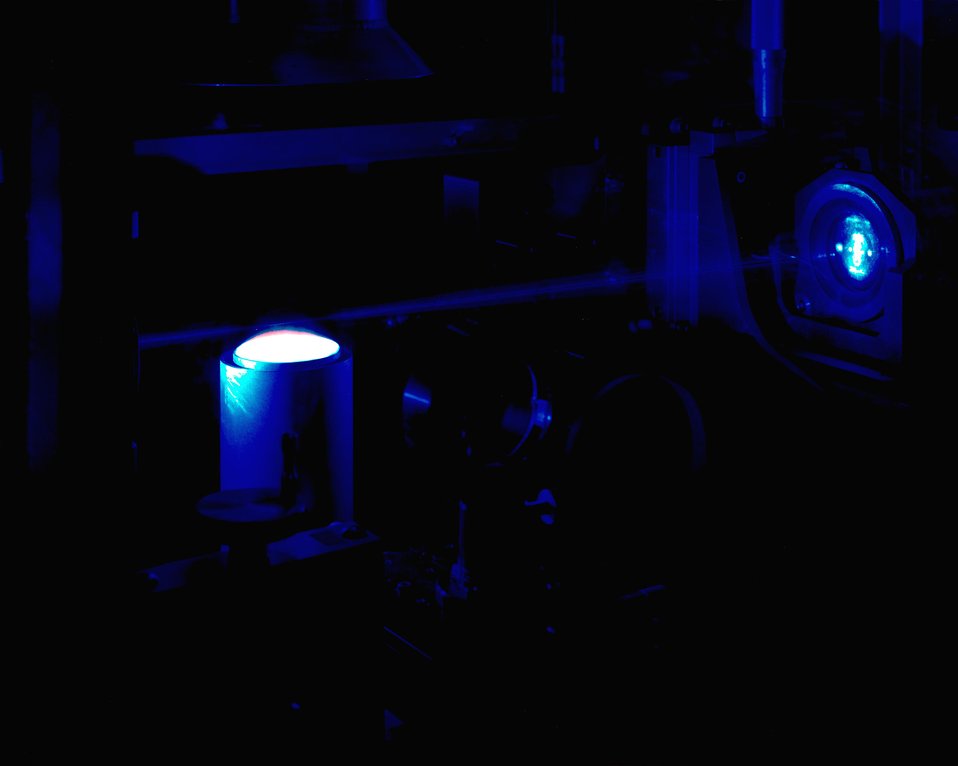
RAMAN SPECTROSCOPY TO MEASURE AMBIENT PRESSURE FLAME.

SCIENTISTS USE ADVANCED LASERS AND COMPUTERS AT THE 50,000 SQUARE FOOT, FOUR-BUILDING COMBUSTION RESEARCH FACILITY TO STUDY EXACTLY HOW AND WHY FUELS BURN. IN THE LABORATORY BUILDING, SPECIAL LASER SYSTEMS WITH BEAMS ARE DISTRIBUTED TO 14 INDIVIDUAL LABORATORIES. EACH LABORATORY IS SERVED BY A MINICOMPUTER WHICH IS CONNECTED TO A CENTRAL DATA SYSTEM. IN ADDITION TO BENCH-TOP FLAME STUDIES, THE FACILITY HOUSES SEVERAL MAJOR COMBUSTION EXPERIMENT LABS, INCLUDING FIVE OPTICALLY PORTED RESEARCH ENGINES, A COMPUTER-CONTROL- LED COMBUSTION BOMB, AND LOW-PRESSURE FLAME, COAL FLAME, AND TURBULENT FLAME LABORATORIES. THESE STUDIES COULD LEAD TO THE DESIGN OF HEAT ENGINES AND ENERGY SYSTEMS THAT BURN FUEL MORE EFFICIENTLY WHILE CREATING LESS POLLUTION.